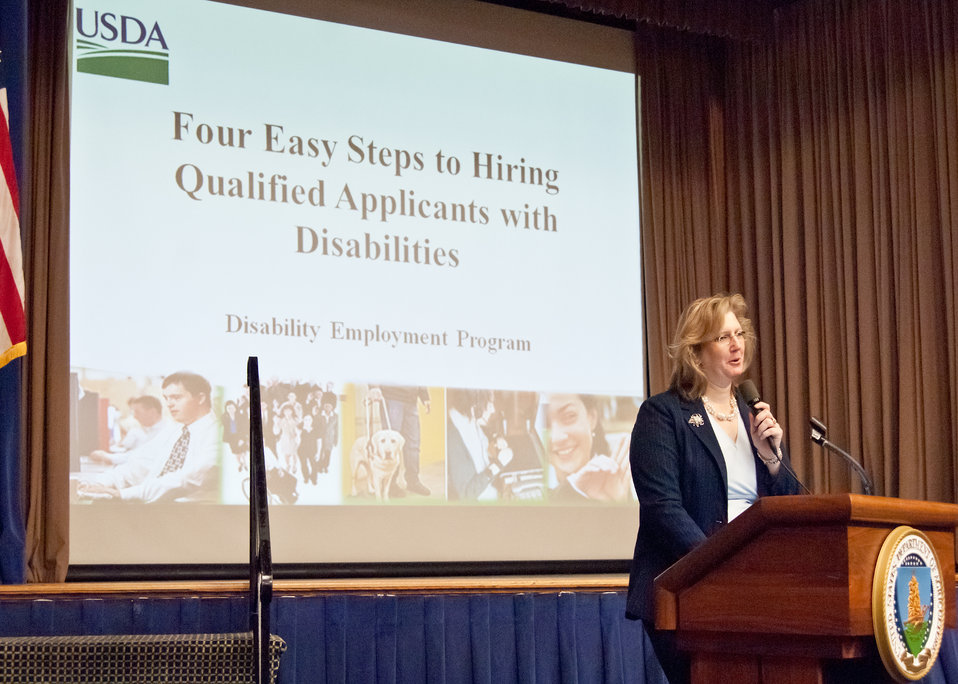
Alison Levy, Departmental Disability Employment Program Manager, Diversity Division, Office of Human Resources Management explained the “Four Easy Steps to Hiring Qualified Applicants with Disabilities” to USDA employees during National Disability Employment Awareness Month event in Washington, DC, Wednesday, October 5, 2011. Agriculture Secretary Tom Vilsack is dedicated to establishing the USDA as the lead Federal agency in employing individuals with disabilities. The theme for the event is “Profit by Investing in Workers with Disabilities.” USDA is committed to ensuring that all our programs are accessible and inclusive of individuals with disabilities.